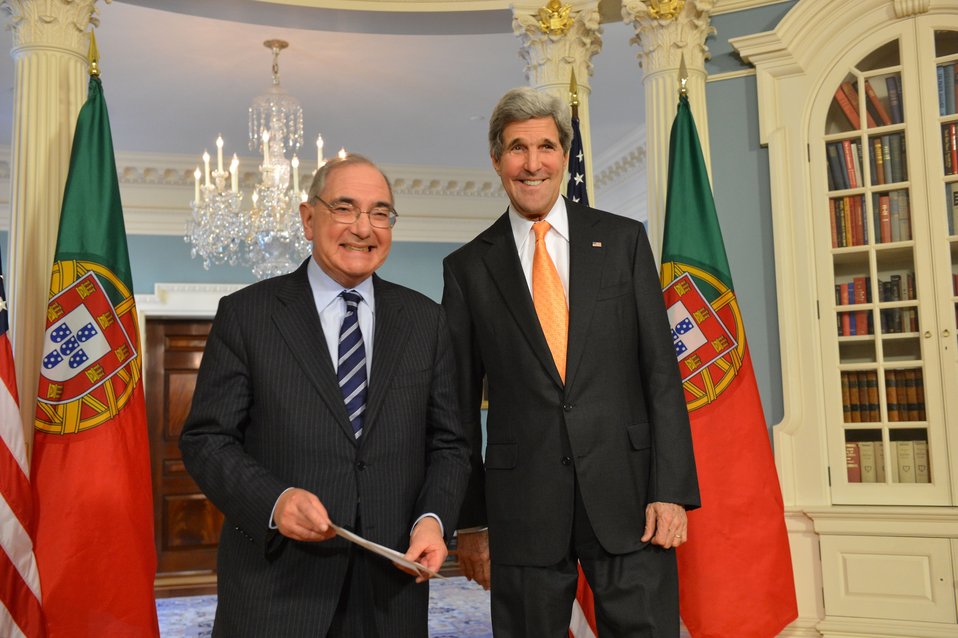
Secretary Kerry and Portuguese Foreign Minister Machete Address Reporters

U.S. Secretary of State John Kerry and Portuguese Foreign Minister Rui Machete address reporters before their bilateral meeting at the U.S. Department of State in Washington, D.C., on January 29, 2014.